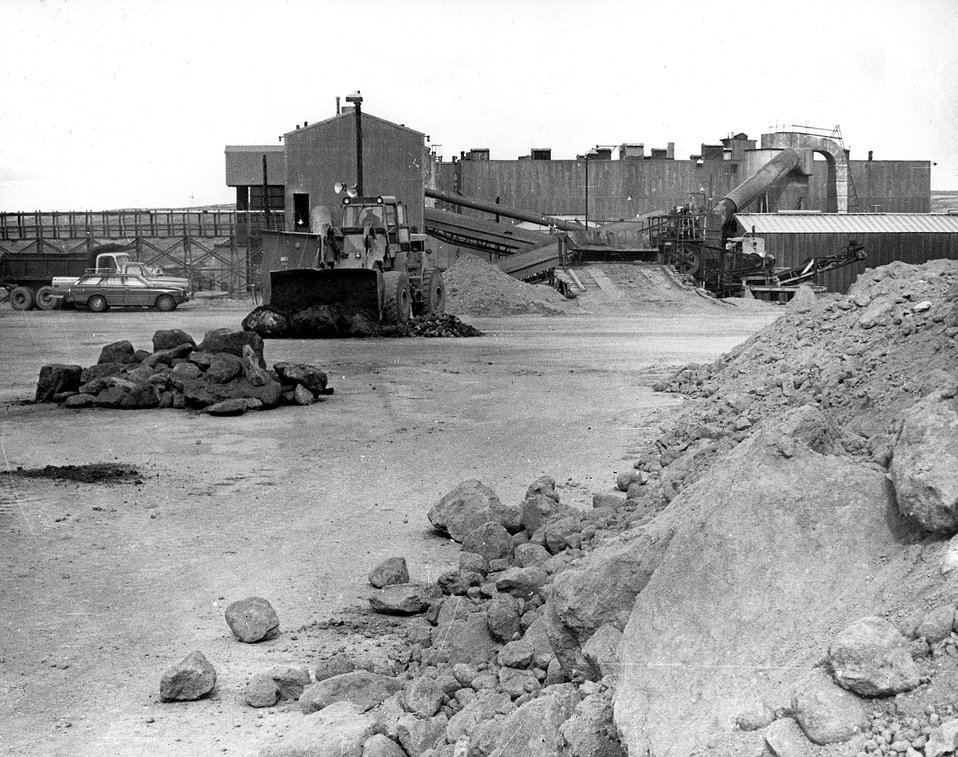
Federal-American Partners 1000-ton a day uranium mill in the Gas Hills of Wyoming. c. 1976